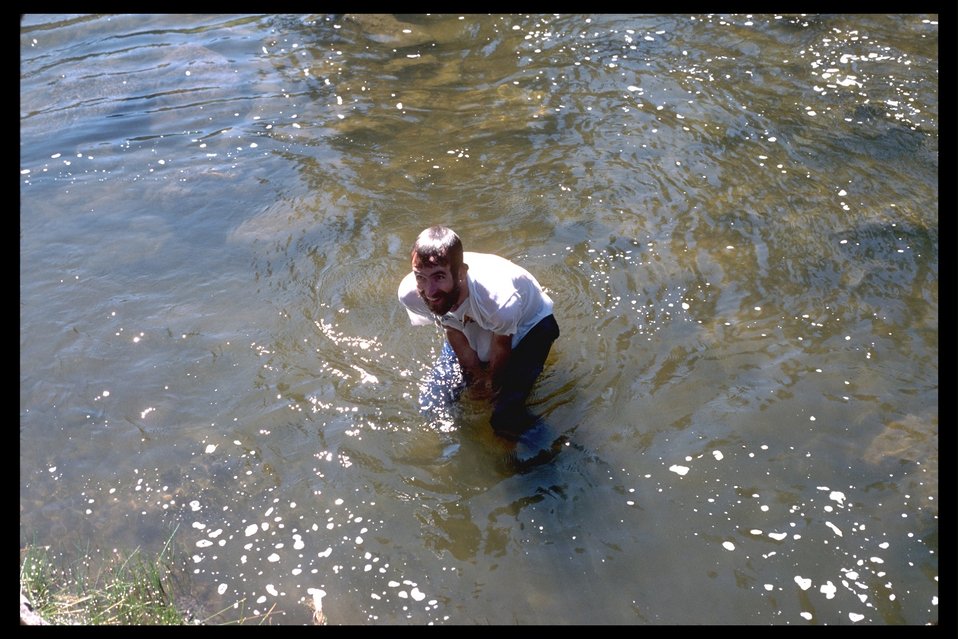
Malhuer Bluebucket WSA, Glen Autobund enjoying a pool in the Malhuer River. (WSA 2-14)